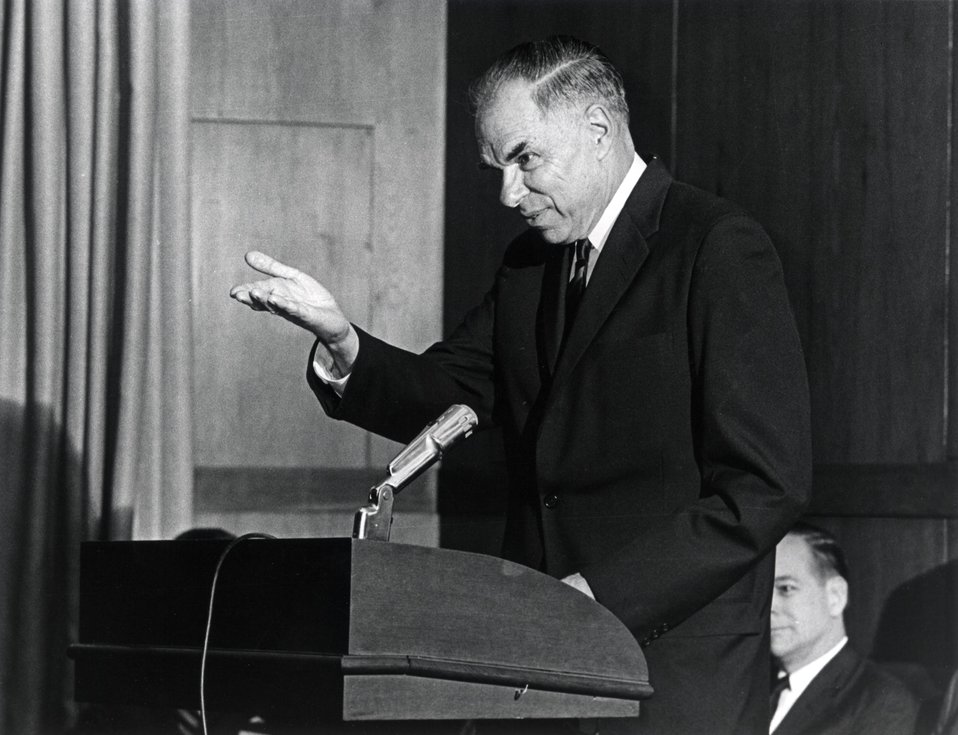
First Lawrence Award Ceremony, in Washington, on June 27, 1960.